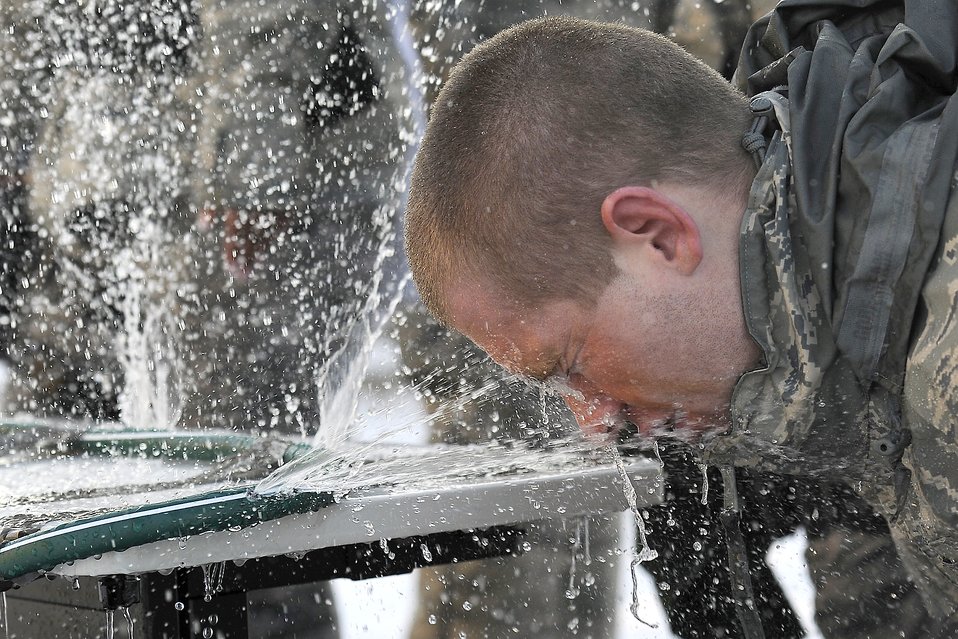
Oleoresin Capsicum spray training

Airman 1st Class Thomas Hearton washes off Oleoresin Capsicum spray from his face Jan. 5, 2011, at Hill Air Force Base, Utah. OC spray is a non-lethal spray, similar to pepper spray, used to temporarily incapacitate individuals. All security forces Airmen receive the OC training when they first arrive at their squadron. Airman Hearton is assigned to the 75th Security Forces Squadron.